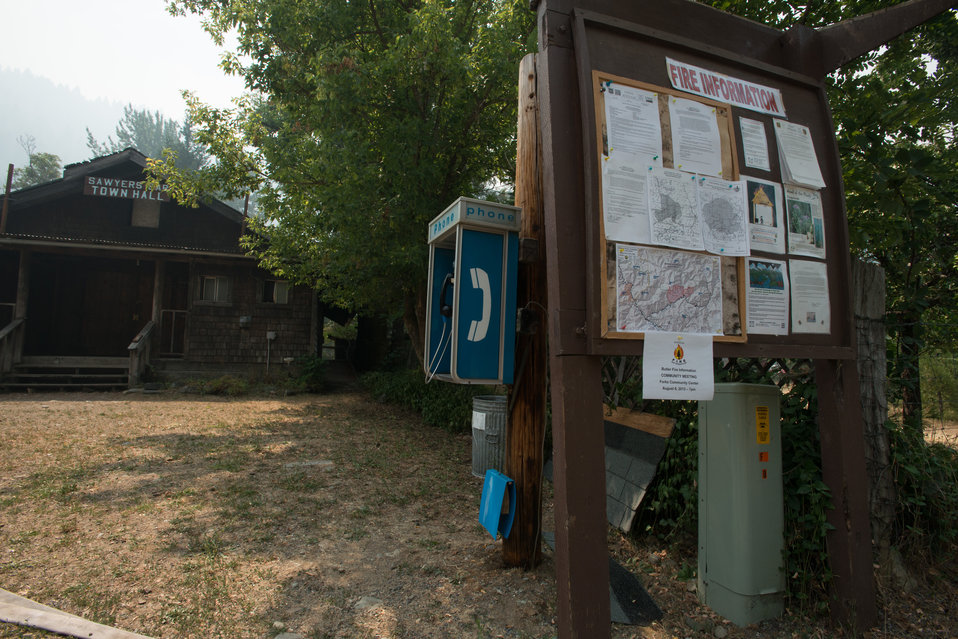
The Sawyer's Bar Town Hall sits amongst trees, slightly off the main street where the Fire Information Bulletin Board has the latest information about the Salmon River Complex Fire, not far from this location at Sawyers Bar, CA in the Klamath National Forest, Tuesday, Aug. 6, 2013. Fire fighters specializing both structural and wildland firefighting from Tahoe National Forest, Mt. Shasta-Trinity National Forest, South Yreka Fire Department, Dunsmuir-Castella Fire Department and others, have been called to the Salmon River Complex Fire, and conduct their structure-by-structure assessment of the urban intermix environment, at Sawyers Bar, CA in the Klamath National Forest, Tuesday, Aug. 6, 2013. The firefighters advise resident about fire prevention measures they are doing on their own as well as other measures they could take to prepare for fire. Actions such as moving away firewood, cutting and clearing plants next to their structures, and using garden hoses to soak structures and grounds all help in the event the main fire comes into their town.
There are two types structure environments in the realm of wildland firefighting.
This urban intermix structural protection environment is generally the more challenging, where structures have been built within a wildland area, isolated to some degree from other structures, but with no separation from wildland fuels (trees, brush and grass). This requires each structure to be assessed on a case-by-case basis. Fire protection measures will be tailored to each situation; defending these structures require a more complex solution, more firefighters, equipment and resources per structure.